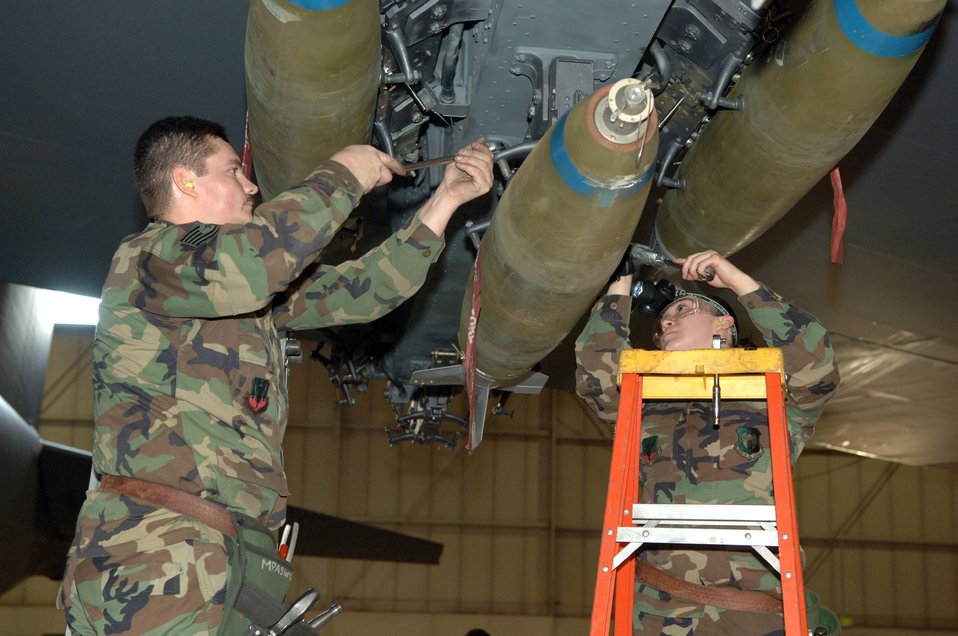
Secure bomb

MINOT AIR FORCE BASE, N.D. (AFPN) -- Tech. Sgt. Steve Root and Senior Airman Stephanie Lopez secure a bomb during a load crew competition here Jan. 27. The crews loaded nine Mk-82 500-pound general purpose bombs during the competition. The four-person crews were graded on teamwork, safety, precision and speed. Both Airmen are weapons loaders assigned to the 5th Aircraft Maintenance Squadron.